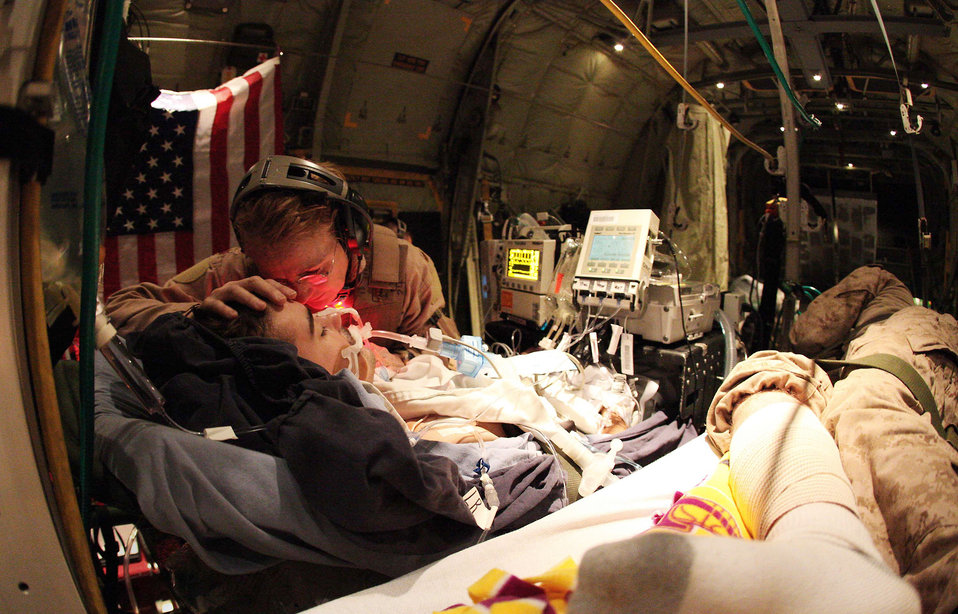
Memories of 6-month Afghanistan tour linger for Reserve nurse

Maj. Deborah Lehker comforts a wounded Canadian Army soldier Feb. 14, 2010, aboard a C-130 Hercules on an emergency airlift between Kandahar Airfield, Afghanistan, and Bagram Airfield Afghanistan. Major Lehker is a 452nd Aeromedical Staging Squadron nurse.